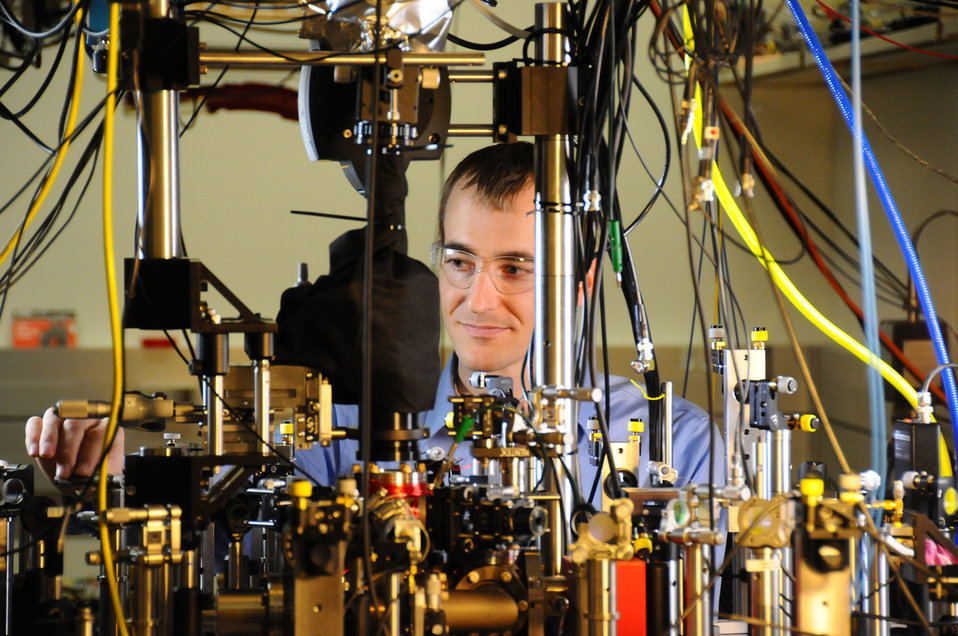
David Leibrand and Quantum Logic Clock

NIST researcher David Leibrandt and the quantum logic clock.

See also www.nist.gov/pml/div688/2013 1 17 newera atomicclocks 2.cfm